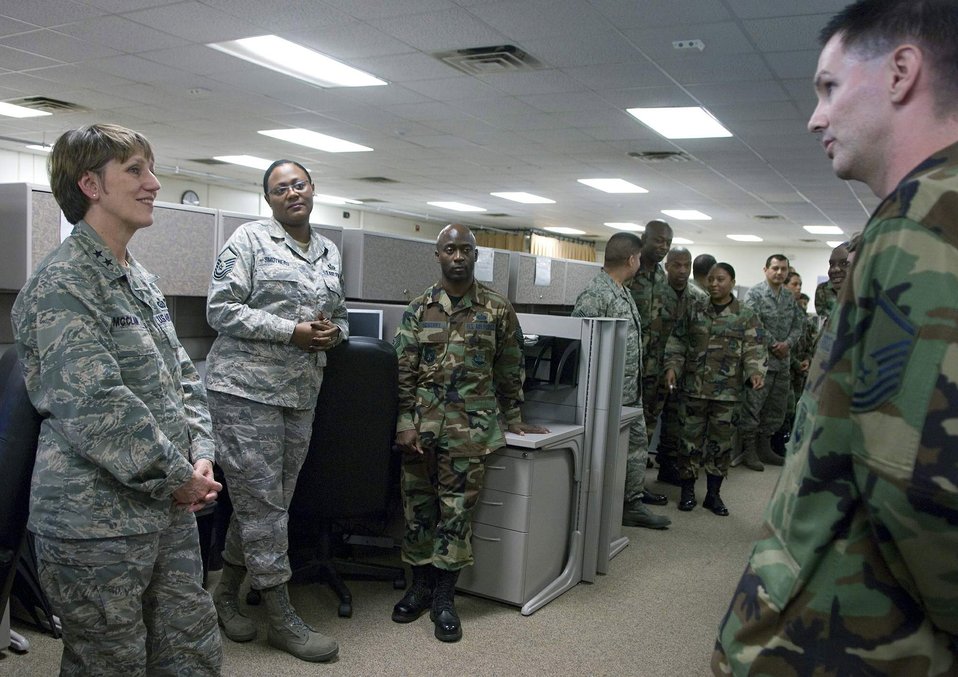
AFPC general talks about woman in the military

Maj. Gen. K.C. McClain talks with customer service personnel March 18 at the Air Force Personnel Center's 24-hour-operations center. General McClain is the commander of the AFPC at Randolph Air Force Base, Texas. She is AFPC's 23rd commander and a 30-year-career Airman. AFPC members are responsible for developing personnel programs, implementing personnel policies and conducting personnel operations for 1.25 million Air Force military, civilian and retirees worldwide. The unit has 2,200 members.